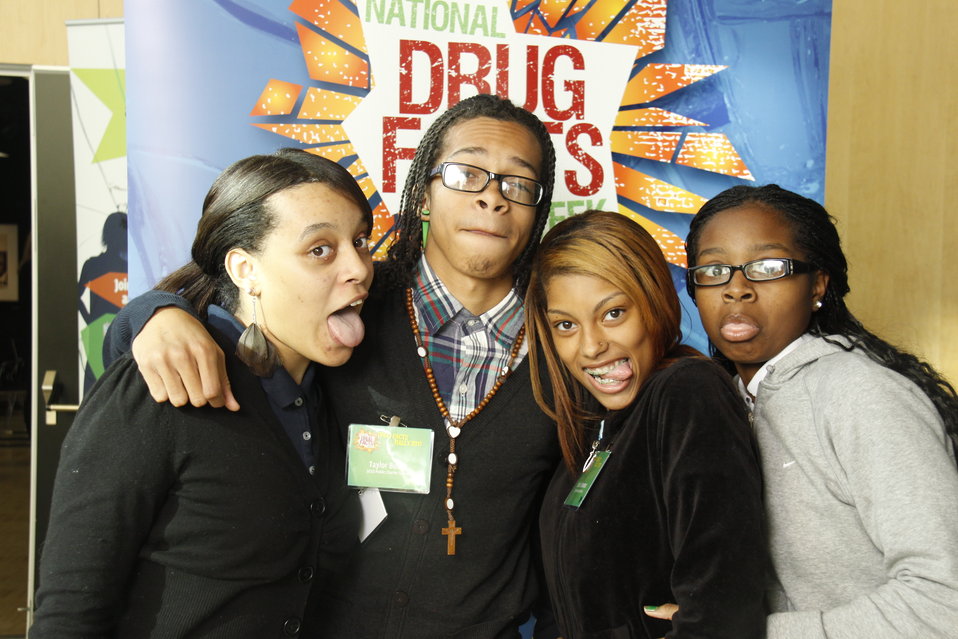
NDFW Mentor Event